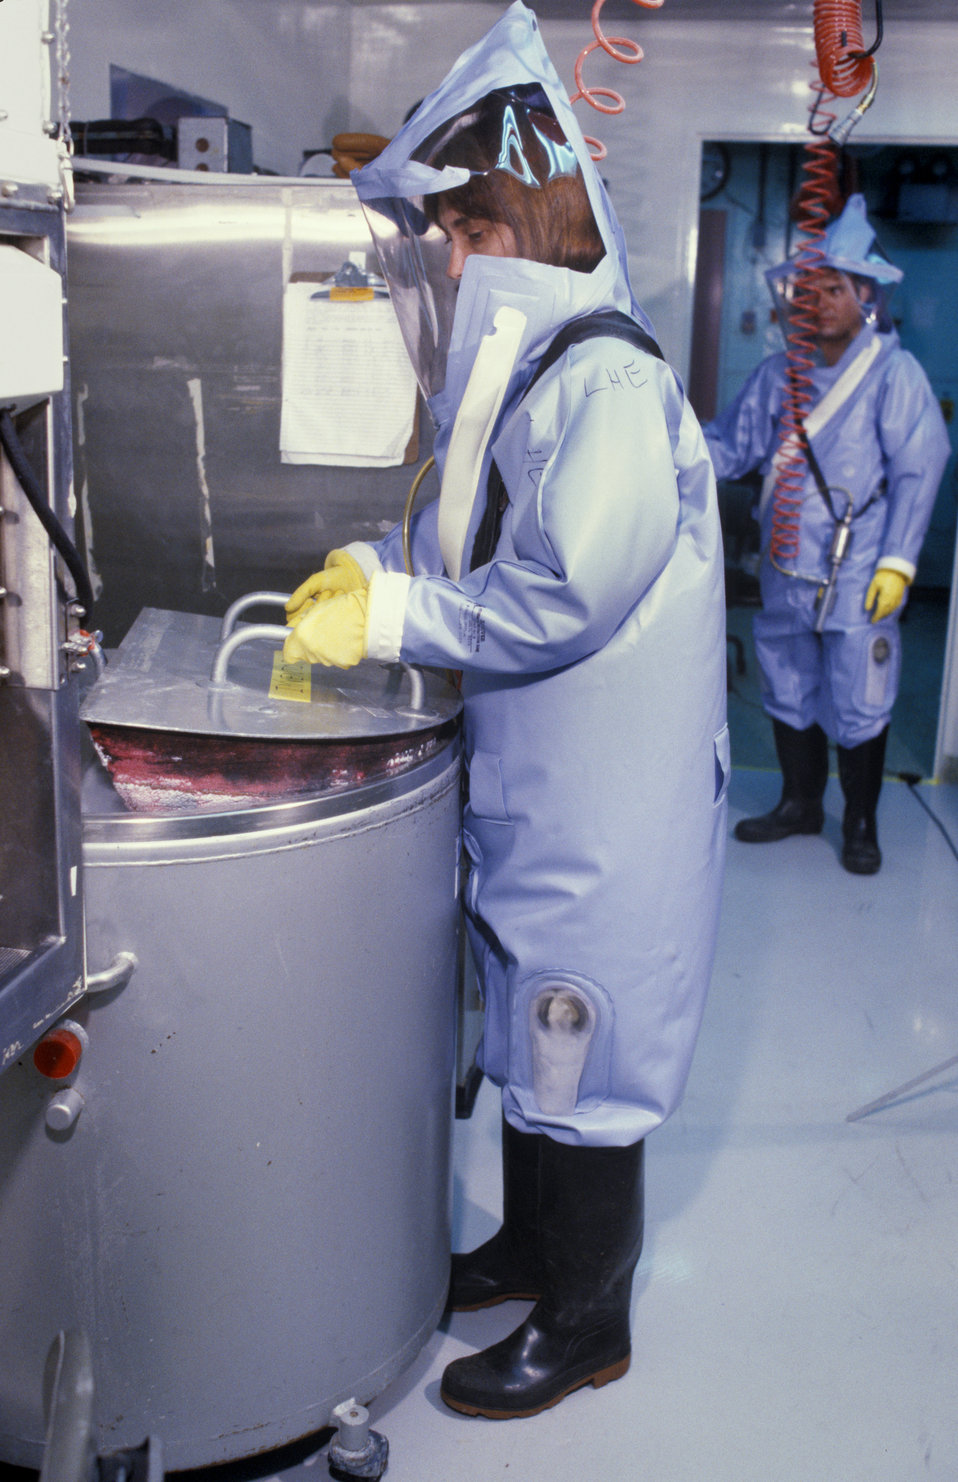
A CDC scientist conducts laboratory research in the Biosafety Level 4 laboratory, Atlanta, GA.